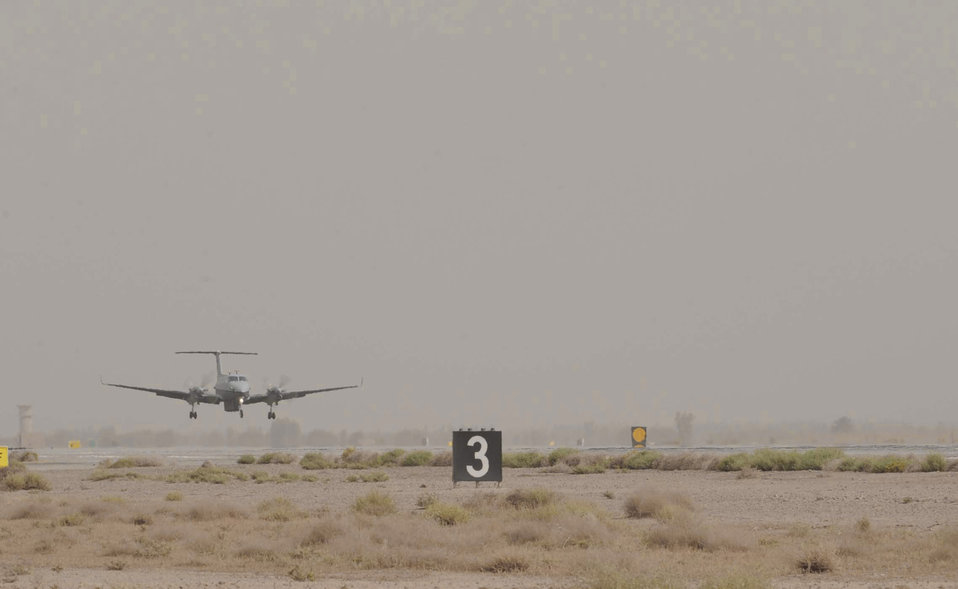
MC-12 joins the fight in Iraq

The Air Force's new MC-12 Liberty aircraft and the first one deployed in-theater lands June 8 at Joint Base Balad, Iraq. A medium-altitude manned special-mission turboprop aircraft designed for intelligence, surveillance and reconnaissance, MC-12 aircraft supports coalition and joint ground forces.